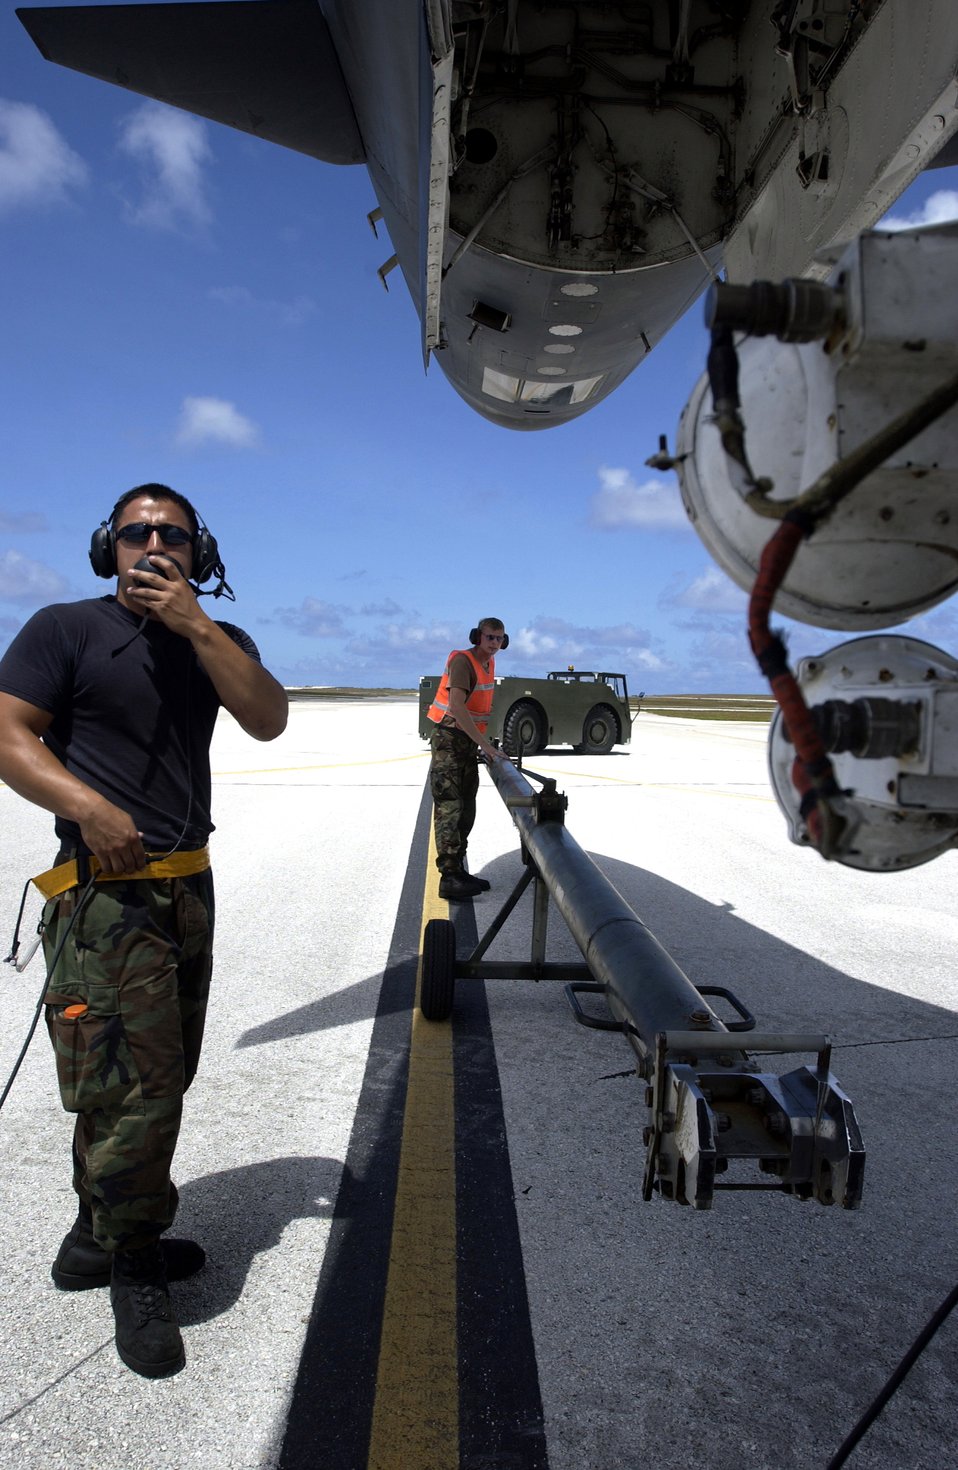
Presence in the Pacific

Airman 1st Class Liam Arellano connects a tow bar to a B-1B Lancer while Staff Sgt. Edward Pren communicates with the aircrew Monday, April 17, 2006, at Andersen Air Force Base, Guam. The Airmen are assigned to the 36th Expeditionary Aircraft Maintenance Squadron.